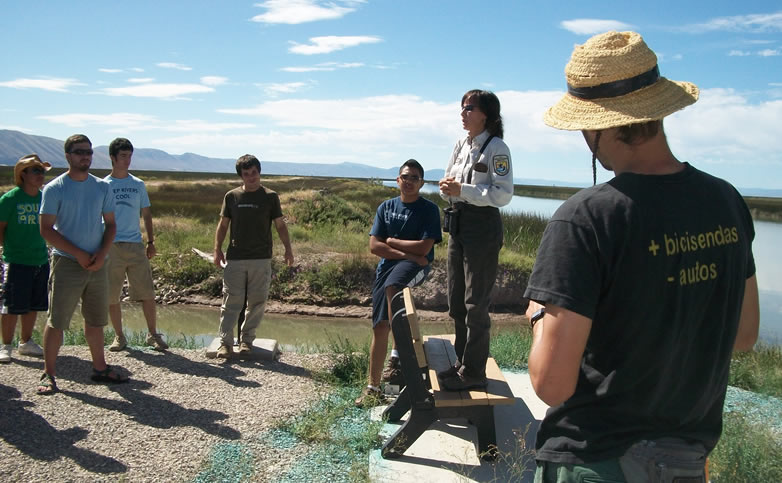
Bear Lake National Wildlife Refuge

The Youth Conservation Corps(YCC)crews wrapped up their eight week program with a field trip to Bear Lake National Wildlife Refuge. Joining them were Utah Conservation Corps crew who worked with the YCC crew on a trail project.